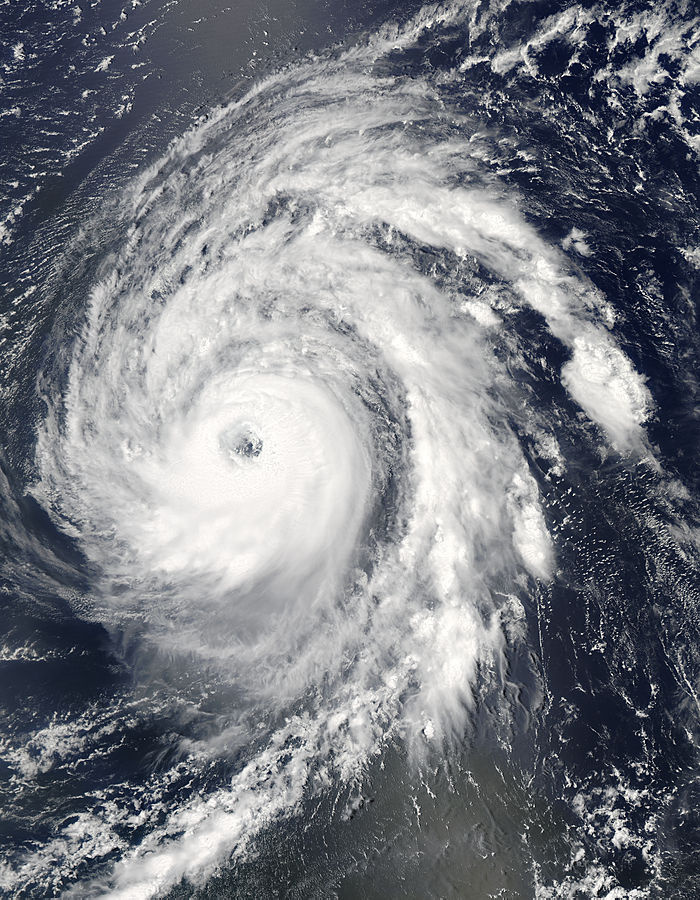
August 19, 2009 - Hurricane Season 2009: Hurricane Bill (Atlantic)